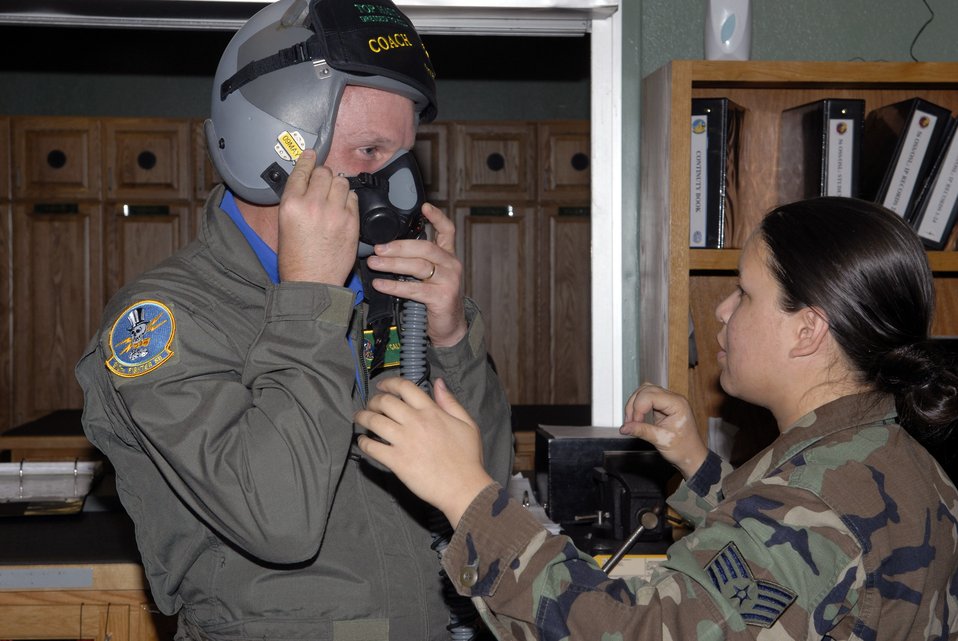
Academy football coach shares playbook for success

Staff Sgt. Melissa McCool assists Troy Calhoun, U.S. Air Force Academy Falcon head coach, with his face mask prior to an incentive flight April 18 with the 310th Fighter Squadron. Sergeant McCool is a 56th Operations Support Squadron aircrew flight journeyman,